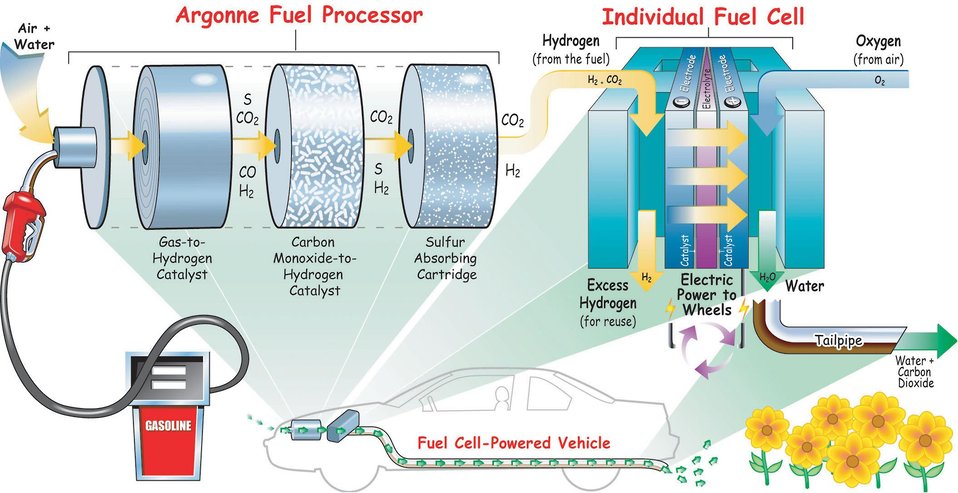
GRAPHIC OF HOW A FUEL CELL WORK.

ARGONNE NATIONAL LABORATORY'S FUEL PROCESSOR TURNS PETROLEUM-BASED FUELS, SUCH AS GASOLINE, INTO HYDROGEN PLUS CARBON MONOXIDE AND CARBON DIOXIDE. THE CARBON MONOXIDE IS CHANGED INTO ADDITIONAL HYDROGEN PLUS SULFUR AND CARBON DIOXIDE AND HYDROGEN. THE HYDROGEN POWERS EACH OF SEVERAL FUEL CELLS, WHICH MAKE ELECTRICITY TO POWER THE VEHICLE. THE EMISSIONS ARE CARBON DIOXIDE AND SMALL AMOUNT OF WATER.